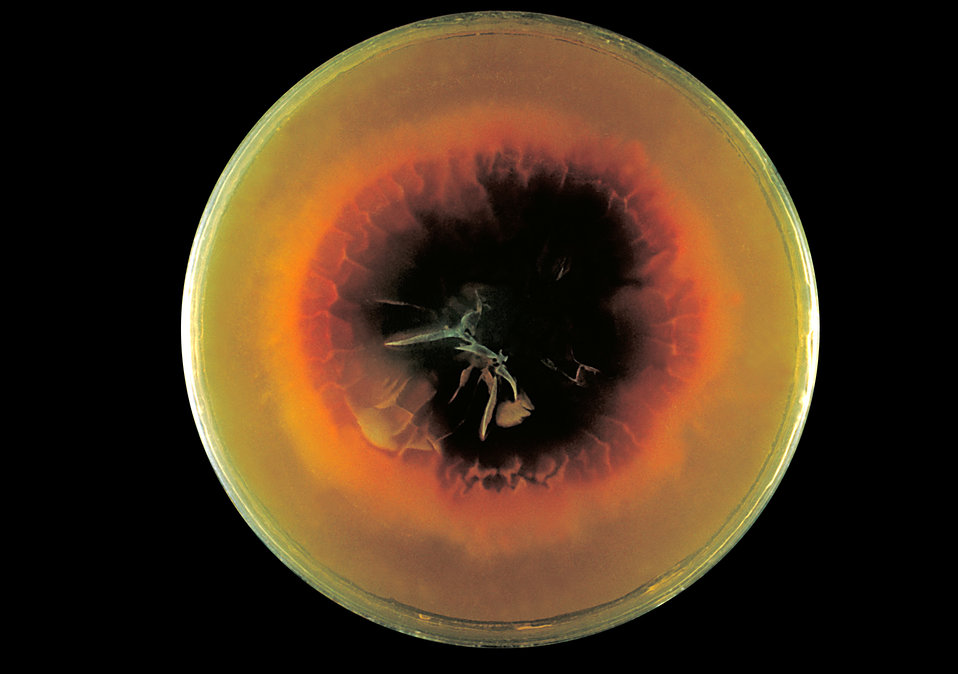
This plate culture is growing the fungus Microsporum persicolor, also known as Trichophyton persicolor.